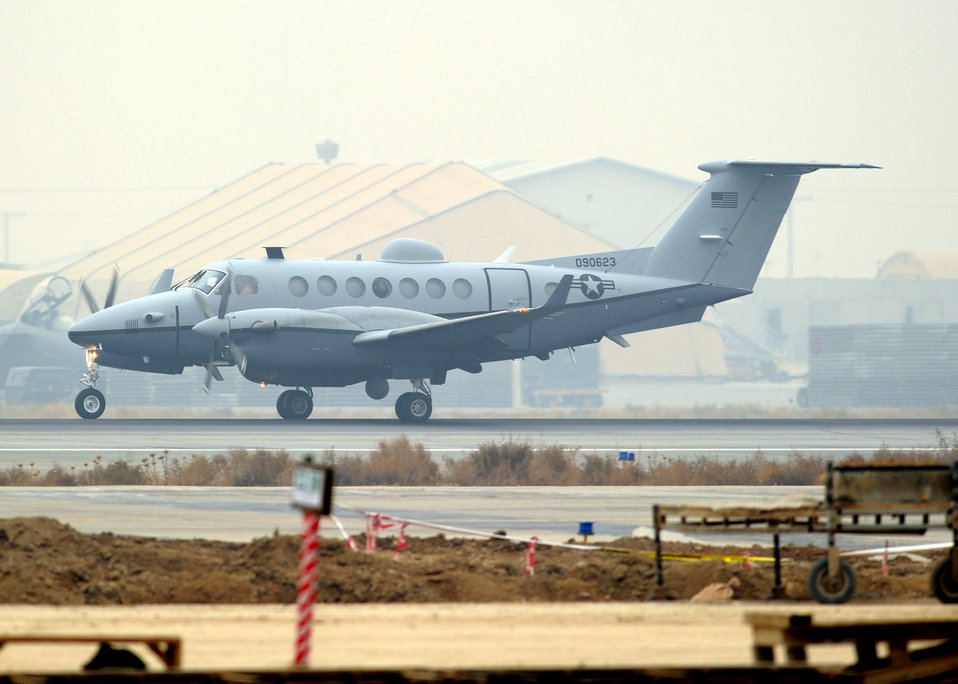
MC-12 arrival into the 455th Air Expeditionary Wing

Airmen welcomed the first Air Force MC-12 to be based in Afghanistan Dec. 27, 2009. The aircraft brings another capability to Operation Enduring Freedom, because the MC-12 is not just an aircraft, but a complete collection, processing, analysis and dissemination system of Airmen committed to securing Afghanistan and protecting Afghan and coalition lives.